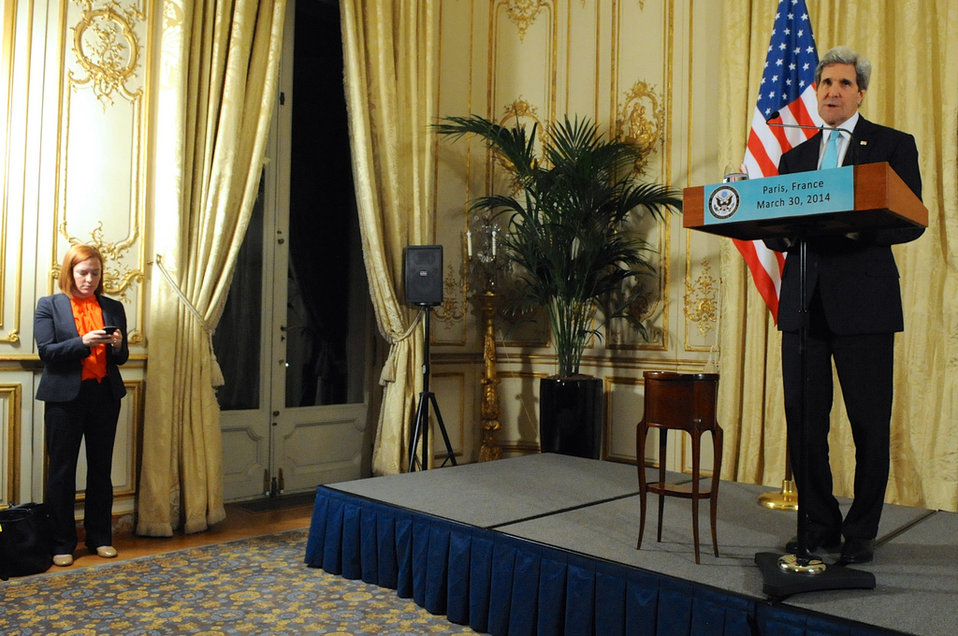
Spokesperson Psaki Takes Notes As Secretary Kerry Holds News Conference

State Department Spokesperson Jen Psaki takes notes as U.S. Secretary of State John Kerry addresses a news conference after meeting with Russian Foreign Minister Sergey Lavrov in Paris, France, on March 30, 2014, to discuss Ukraine.